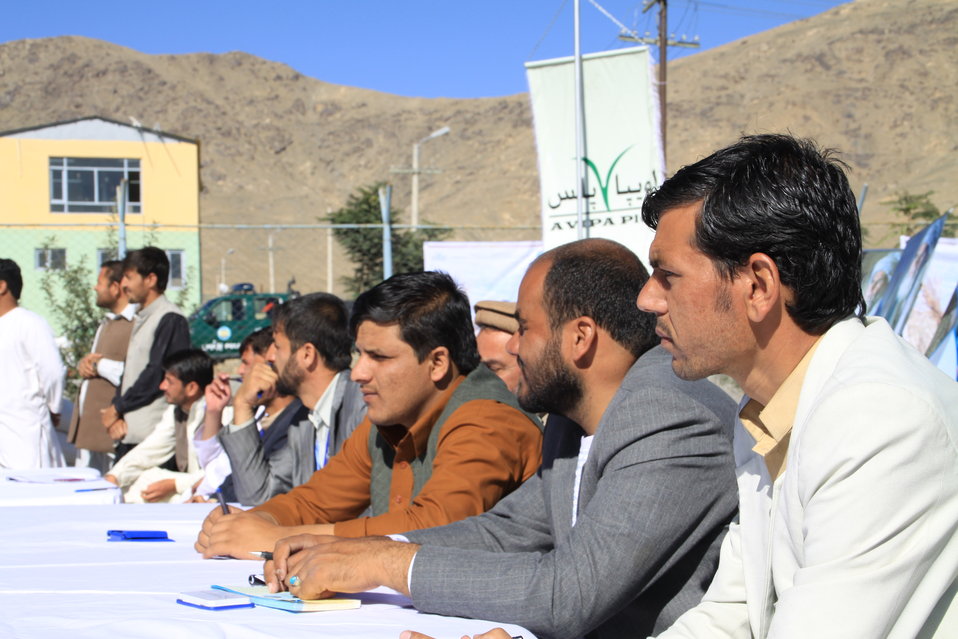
AVIPA Plus Wheat Seed Distribution 101005

US Ambassador Karl Eikenberry and USAID Acting Mission Director Kevin Brownawell joined the Minister of Agriculture, Irrigation and Livestock, H.E. Minister Mohammed Rahimi in signing a Memorandum of Understanding and distributing vouchers to area farmers for wheat and fertilizer.